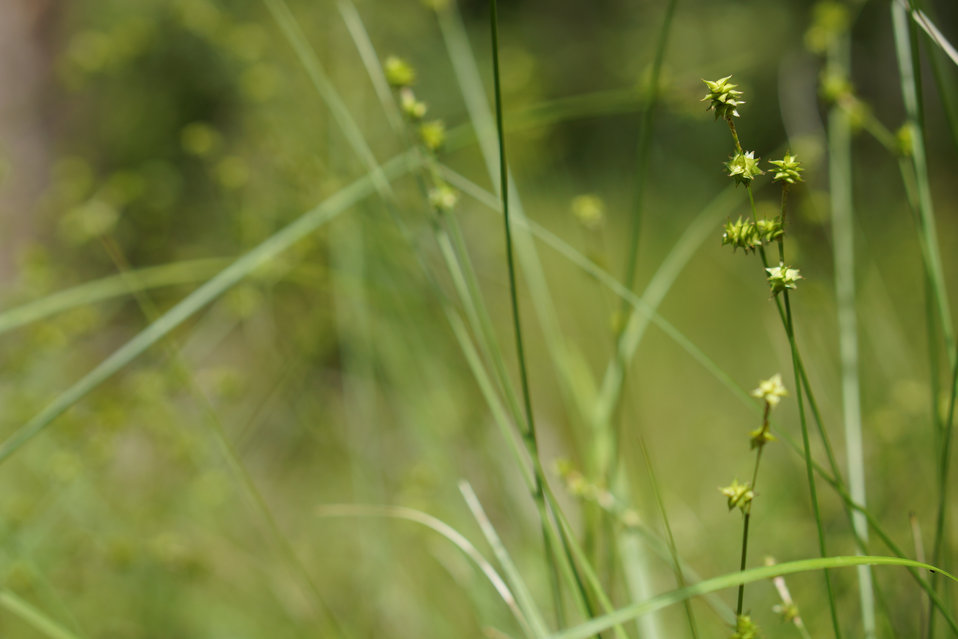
Sedge seedhead

In May, bog conservationists from Tennessee, North Carolina, and Georgia convened in the north Georgia mountains for the spring, 2014 meeting of the Bog Learning Network. The event provided an opportunity for biologists to see, first hand, the result of management efforts at two north Georgia bogs. More importantly, the outings provided an opportunity to share innovative approaches to bog management, such as the role of the Georgia Plant Conservation Alliance in conserving rare plants and coordinating a cadre of volunteers to work on bog management.

The Bog Learning Network was convened in the winter of 2013 as a way to bring together people working for bog conservation across the Southern Appalachians. Southern Appalachian bogs are one of North America’s rarest habitats and home to many rare plants and animals.